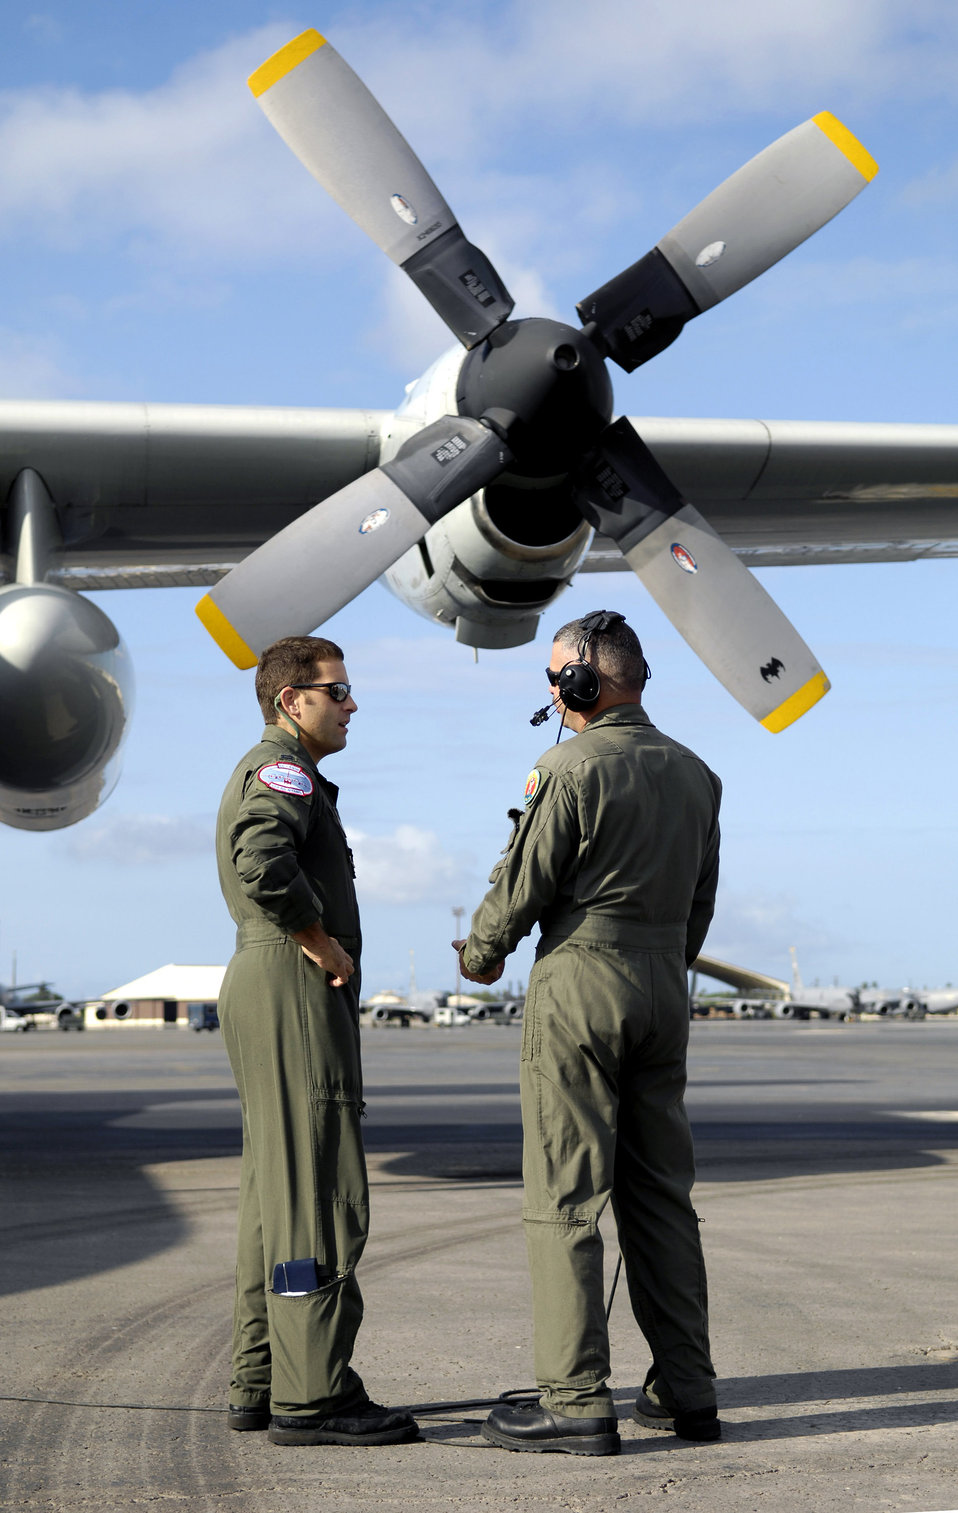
C-130s depart for 'Ice'

Capt. Matt Johnson and Master Sgt. Cliff Devoe conduct a pre-flight briefing Oct. 17 before departing from Hickam Air Force Base, Hawaii. Ski-equipped LC-130 Hercules aircraft, crews and support personnel from the New York Air National Guard's 109th Airlift Wing are transiting Hickam and will begin deploying to McMurdo Station, Antarctica, to support Operation Deep Freeze, an Air Force-led Joint Task Force Support Forces Antarctica mission.